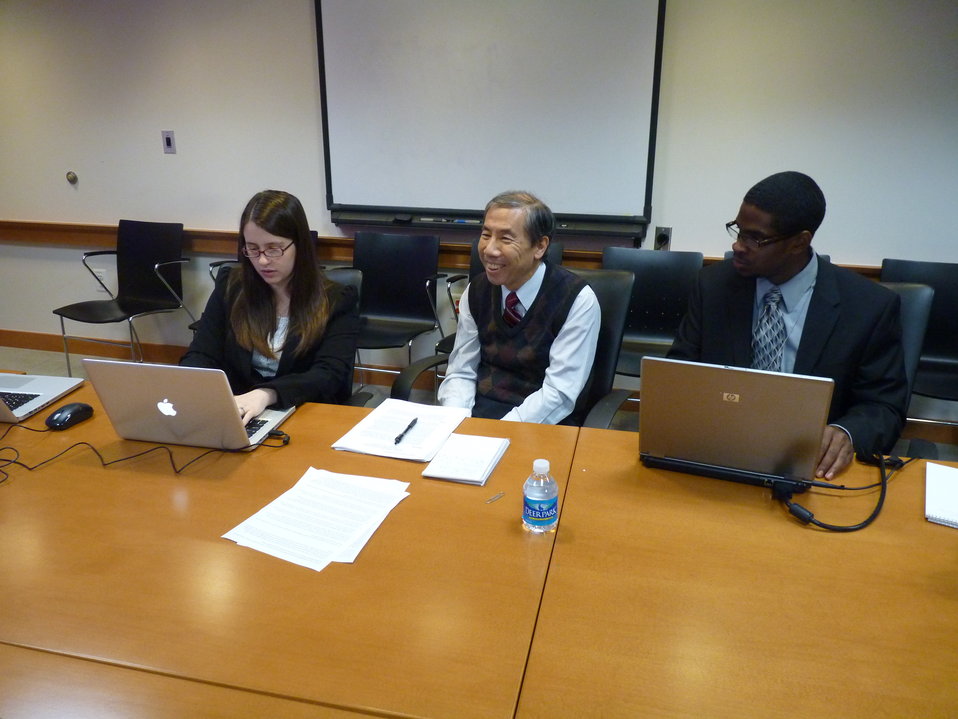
Principal Deputy Assistant Secretary of State for African Affairs Donald Yamamoto participates in a Facebook Chat on Secretary of State Hillary Rodham Clinton’s recent travel to Africa and the future of America’s partnership with Sub-Saharan Africa at the U.S. Department of State in Washington, D.C. on August 17, 2012.